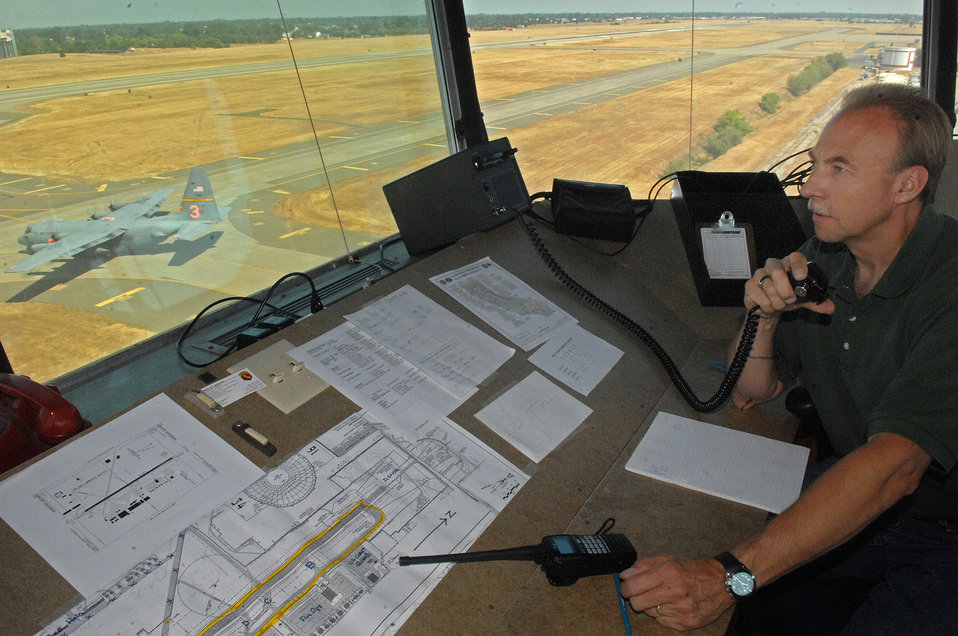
Air traffic controlers watch over airfield, support wildfire effort

William Grava looks out the window as a C-130 Hercules taxies to the runway to begin firefighting operations July 5 from the McClellan Airfield in California. Mr. Grava is an air traffic control specialist from the Federal Aviation Administration's Northern California Terminal Radar Control.